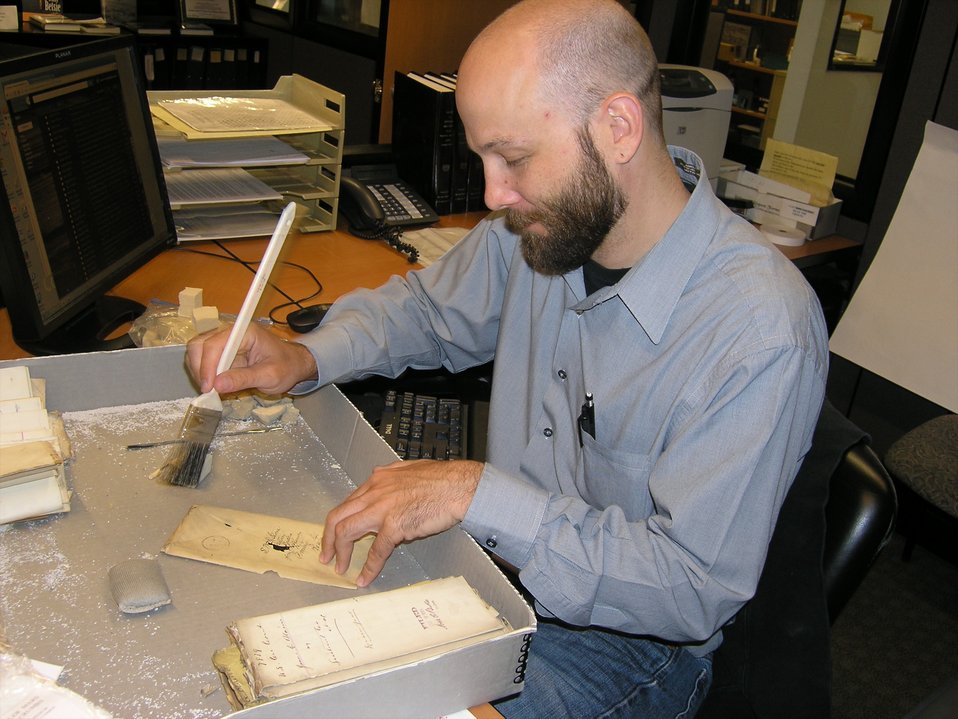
Devon McKeown cleaning archival records; Location: National Archives at Chicago, Chicago, IL